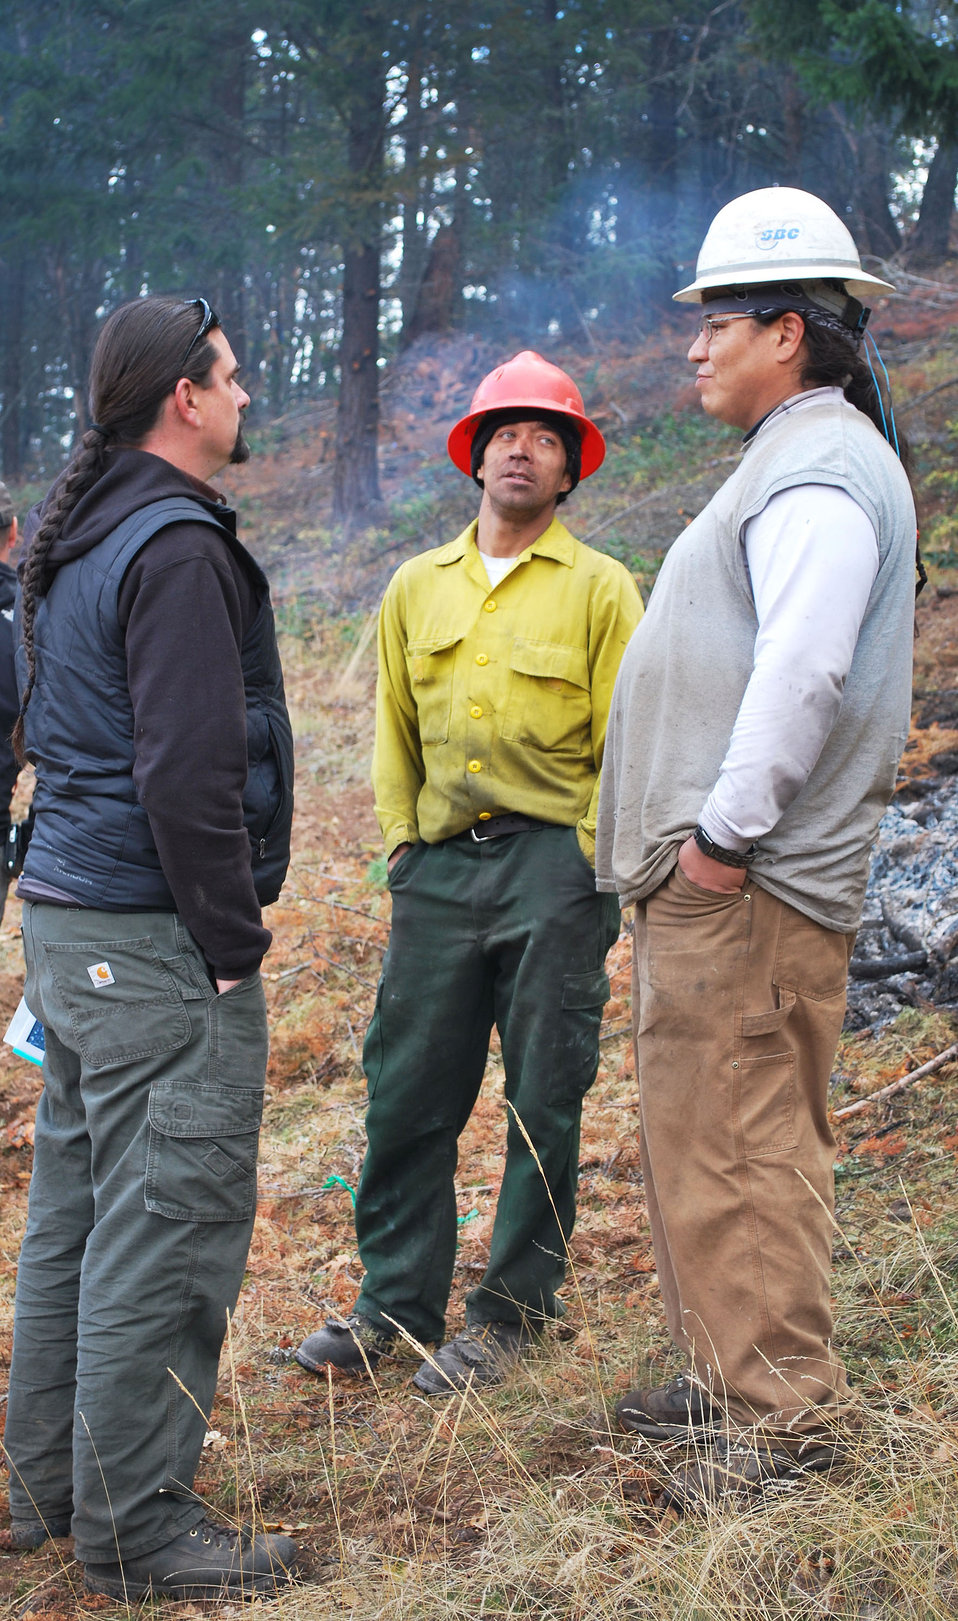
Oak Woodlands Restoration Coordinator and Klamath Tribe Field Crew